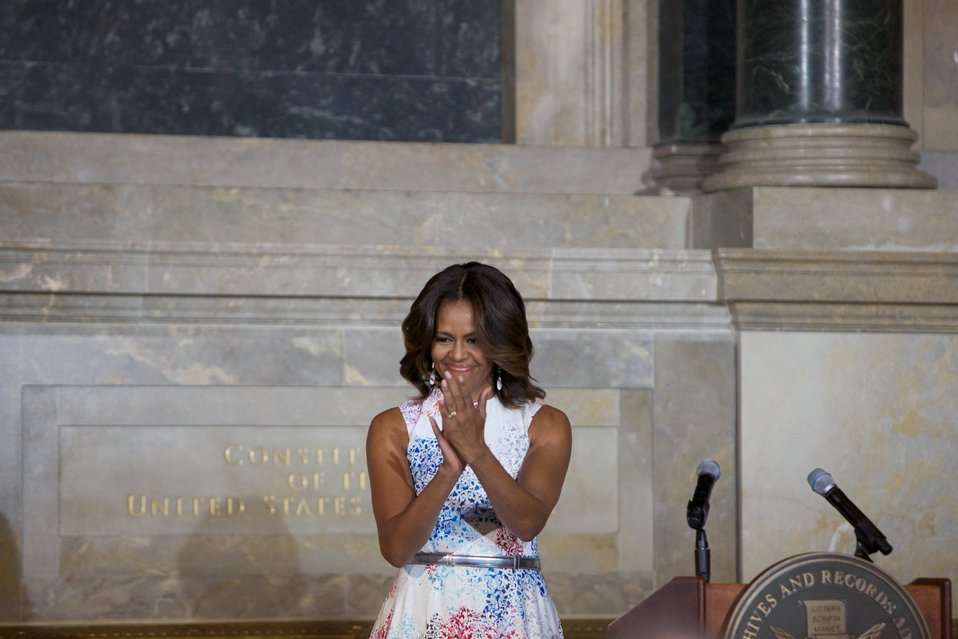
Naturalization Ceremony with Michelle Obama